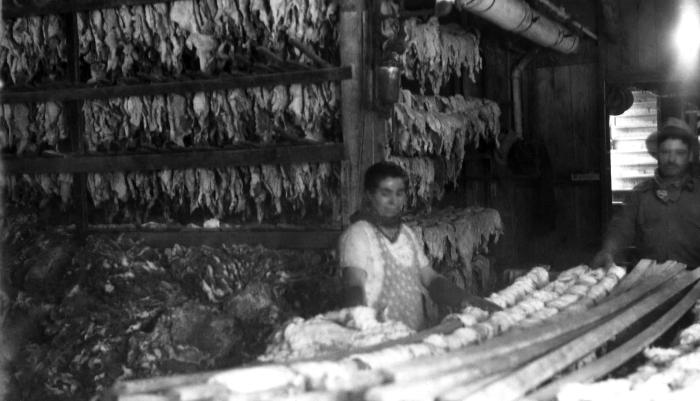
This historical image was provided by the Center for Disease Control's (CDC), National Institute for Occupational Safety and Health (NIOSH). Published in 1937, this photograph depicted a man and woman in a Connecticut animal fur processing establishment who were overseeing the placement of processed furs on to a drying rack. Neither worker was wearing a filtered breathing mask, but both did appear to be wearing gloves.